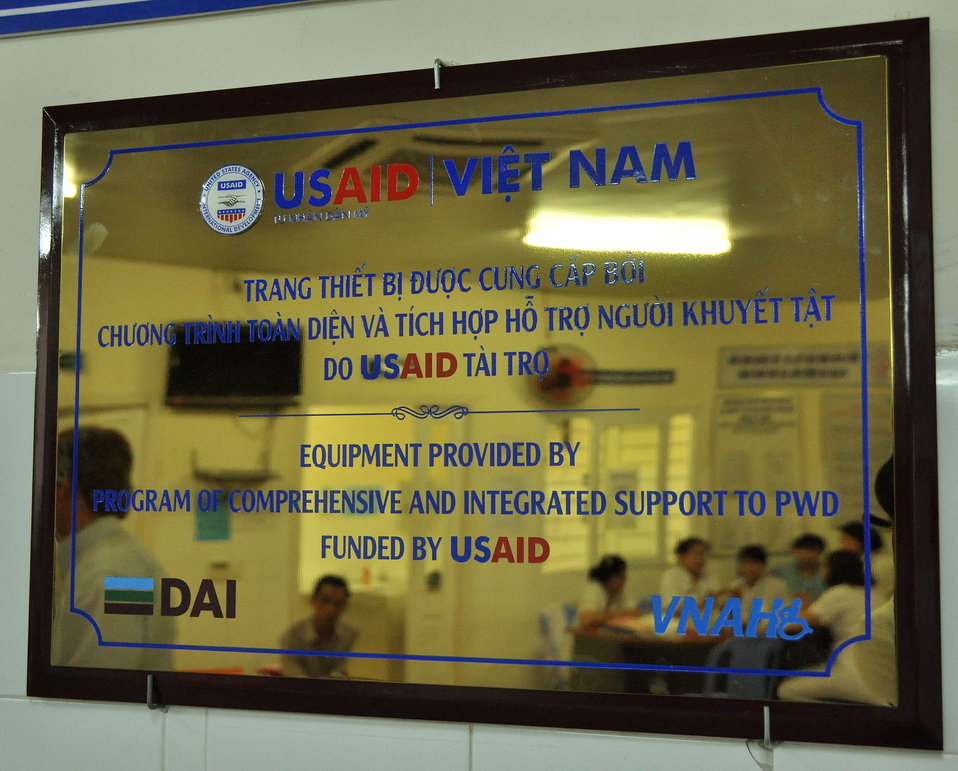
USAID and Partners Join to Open Rehabilitation Department at Women's and Children's Hospital of Danang

July 16, 2013